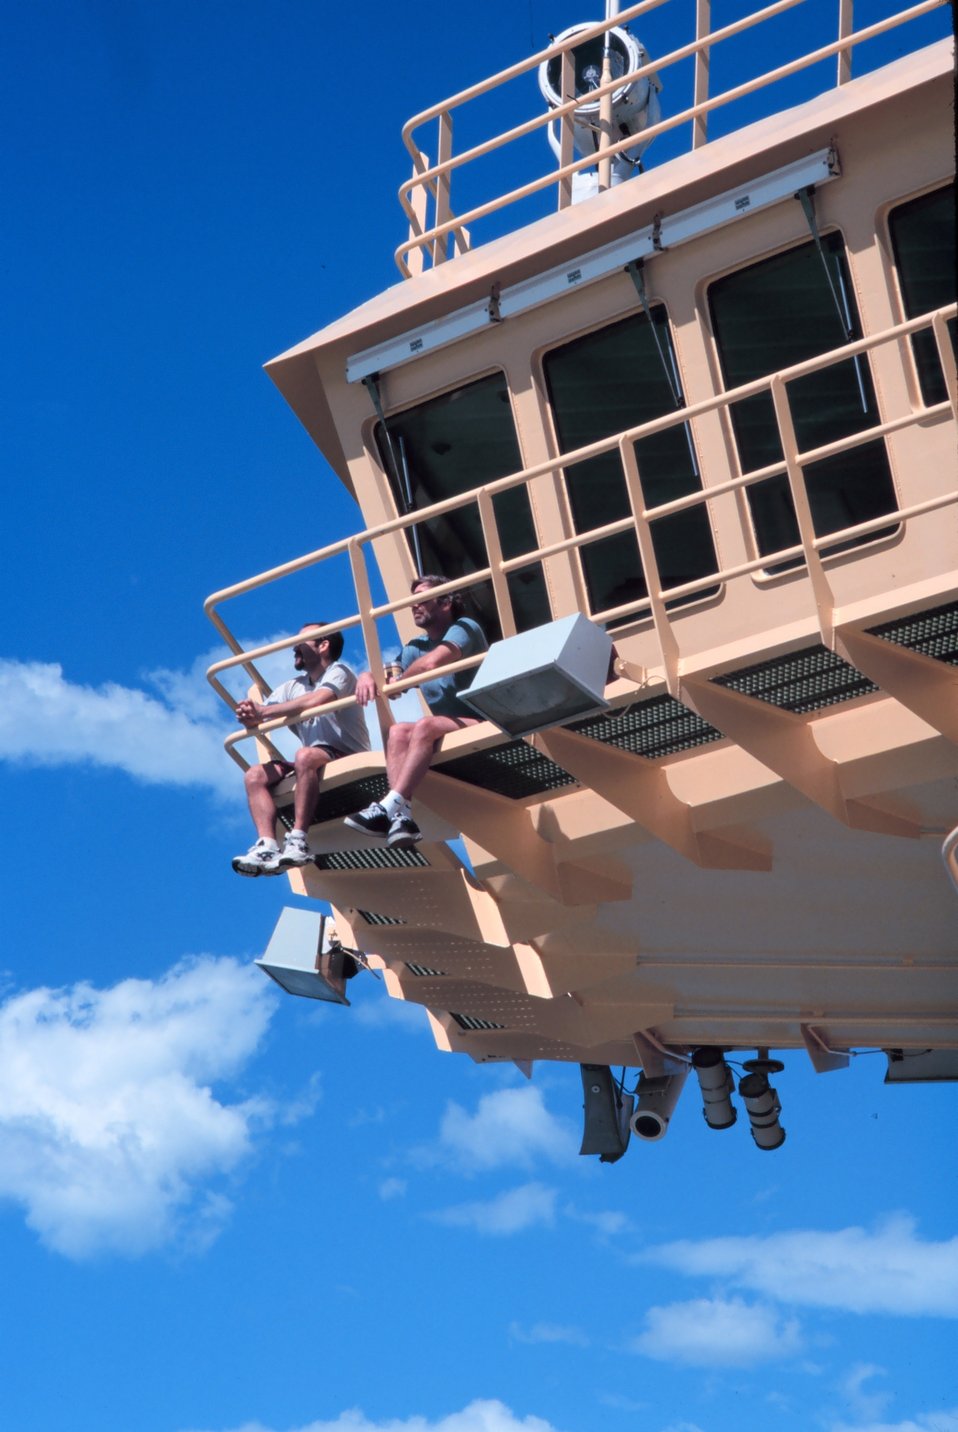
Hanging out on the bridge of the NATHANIEL B. PALMER